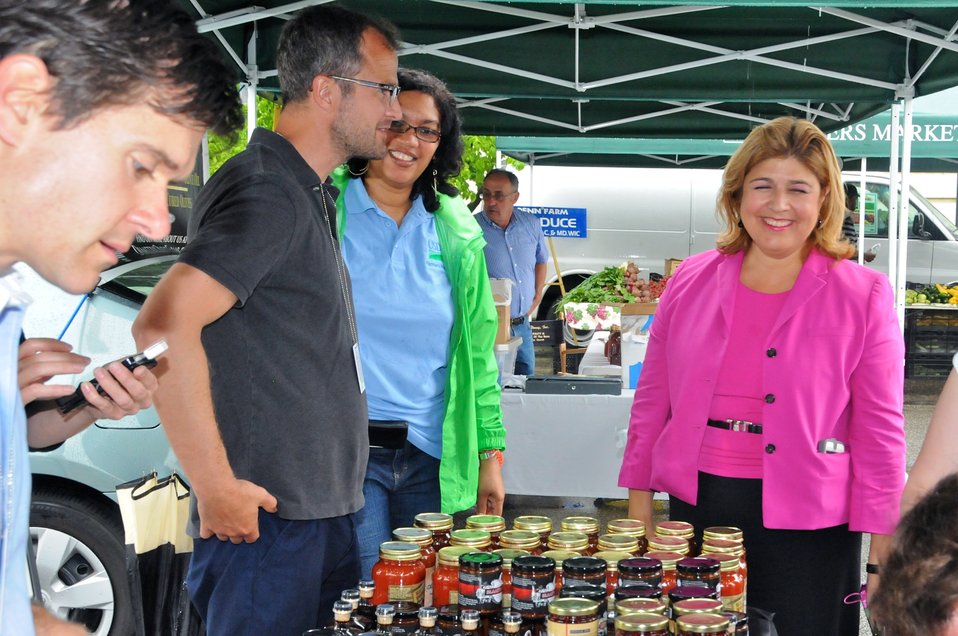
Alonzo and the Beekman Boys

The Beekman Boys, winners of the 2012 Amazing Race, helped kick off the opening of the U.S. Department of Agriculture (USDA) Farmers Market on Friday, Jun. 7, 2013.